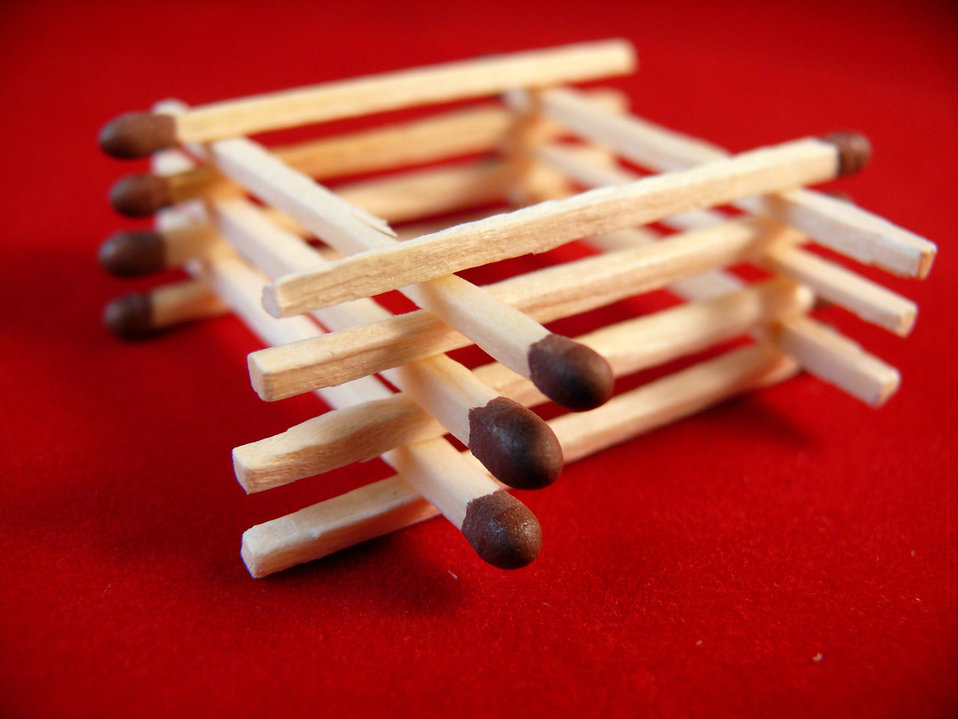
Matches on red backround.